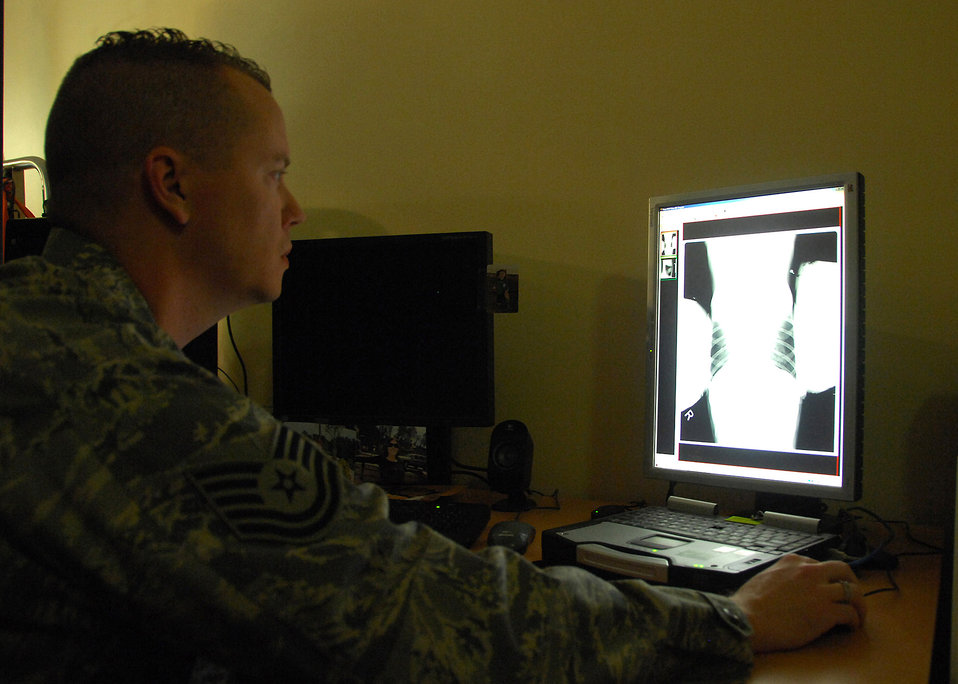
Healing touch

Tech. Sgt. Jeffrey Eller checks the X-ray of military working dog Zack Dec. 13 at an air base in Southwest Asia. Zack received an X-ray to see how his pneumonia had cleared since his last visit. Sergeant Eller is a 386th Expeditionary Medical Group X-ray technician deployed from Wright-Patterson Air Force Base, Ohio. He hails from Dallas.